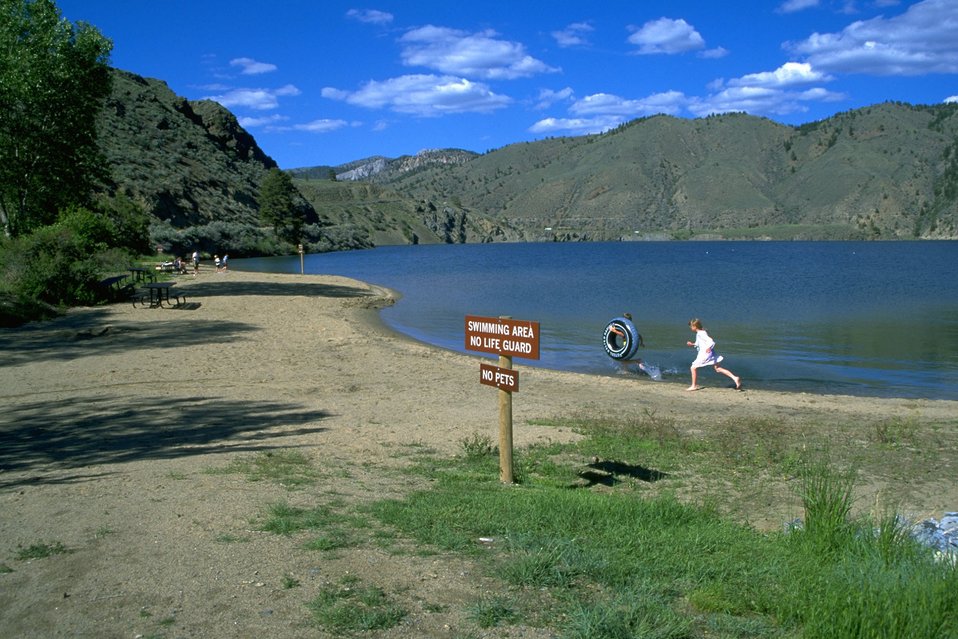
Sign at the Swimming Area at Hauser Lake